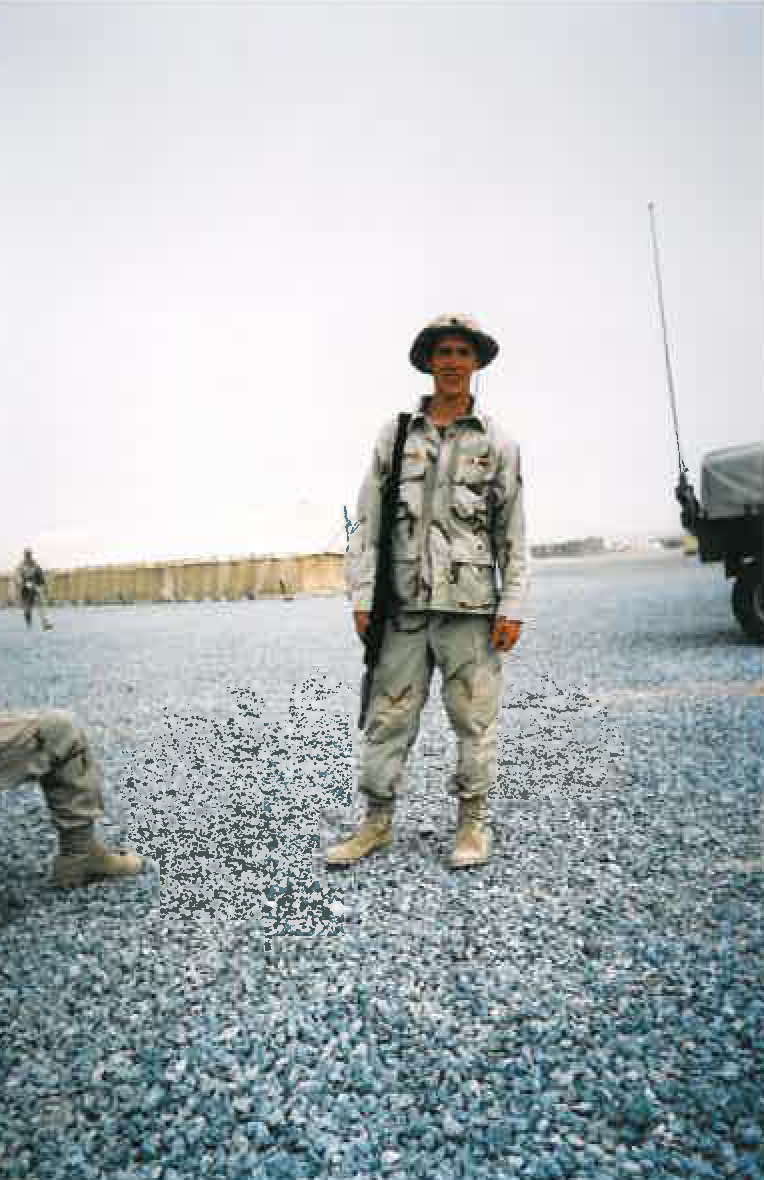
Jake Van Effen, Biological Science Technician/Marquette Biological Station in Region 3, served in the U.S. Army during Operation Iraqi Freedom 1 from January 2003 to August of 2003 in Kuwait and Iraq. His unit, with the help of other military branches, constructed the 762-foot Mabey-Johnson Bridge on the Tigris River in Al Zubaydiya, Iraq. It was the largest floating bridge ever built by military engineers.